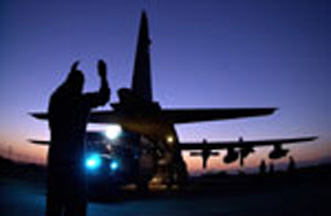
Airborne emergency room

During Operation Northern Watch, Staff Sgt. Doug Perkins directs an ambulance into position to unload lifesaving equipment into the aircraft. The deployed medical team is from the 59th Medical Wing, Wilford Hall Medical Center at Lackland Air Force, Texas, and assigned to the 39th Medical Group at Incirlik Air Base Turkey. Sergeant Perkins is assigned to Moody AFB, Ga.